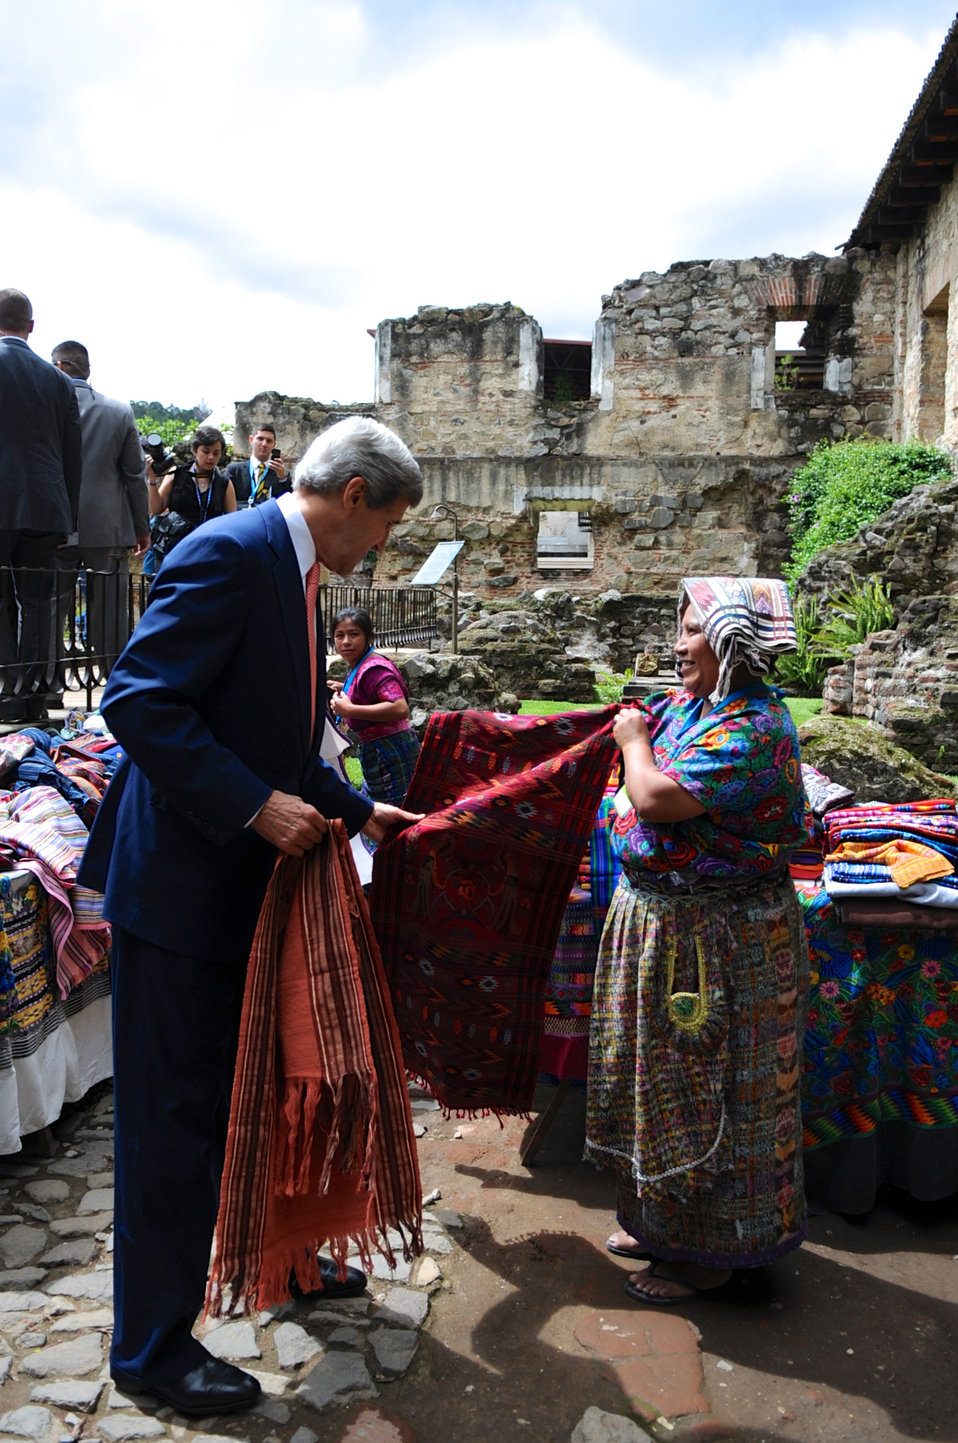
Secretary Kerry Admires the Work of a Textile Worker

U.S. Secretary of State John Kerry examines goods made by a textile worker during a break in an Organization of American States meeting in Antigua, Guatemala, on June 5, 2013.